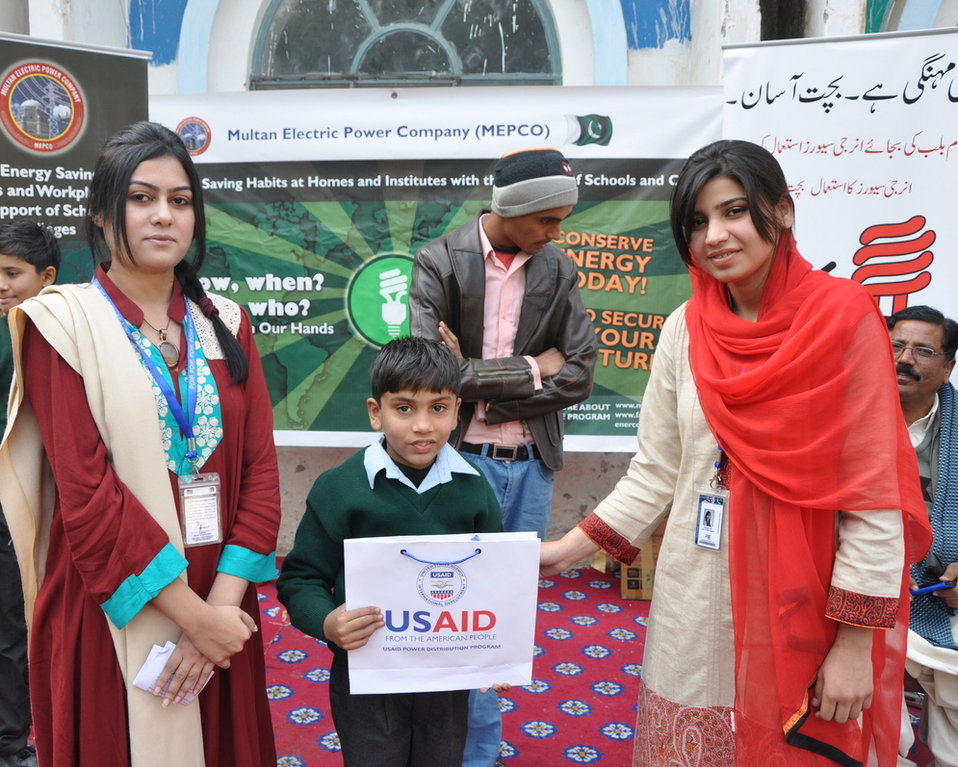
USAID Power Distribution Program-Energy Conservation Seminar at Govt. Bukhari Public School for Boys, Multan.

Multan, January 12, 2013 -During the seminar at Govt. Bukhari Public School for Boys, Miss Saubana Rafiq(USAID,PDP) & Miss Maryam Asif(USAID,PDP) distributing the goody bags among the winners of quiz session.